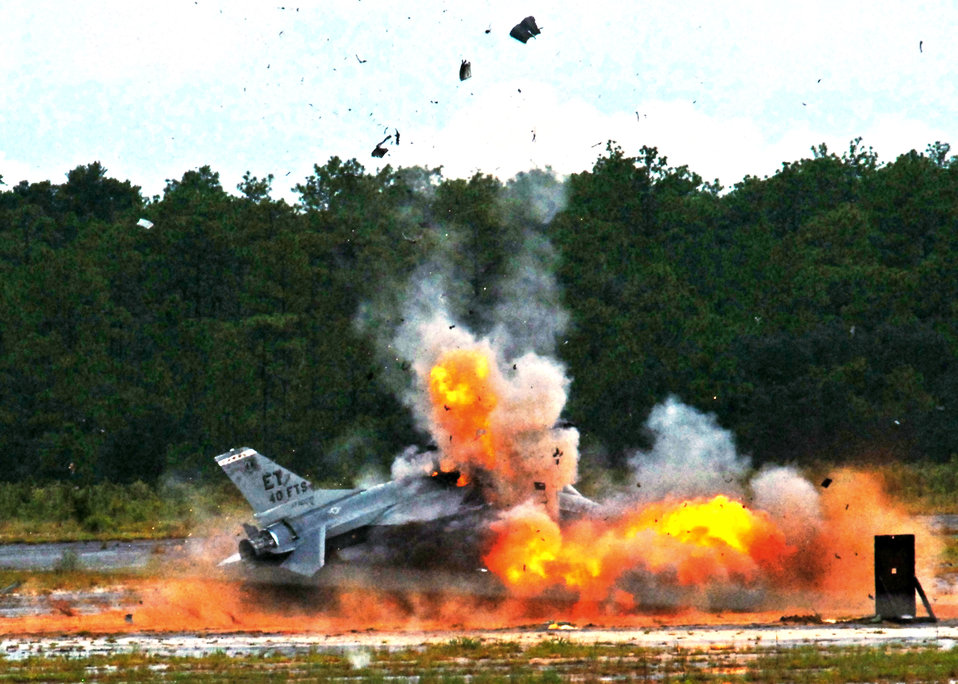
Destructive F-16 test

An F-16 Fighting Falcon explodes, sending debris and shrapnel into the air Aug. 19, 2010, on the range at Eglin Air Force Base, Fla. The explosion was a static test of the flight termination system to be used in the QF-16, a supersonic reusable full-scale aerial target drone modified from an F-16. The purpose of the test was to demonstrate that the FTS design will be sufficient to immediately terminate the flight of a QF-16, as well as to determine a range safety debris footprint.